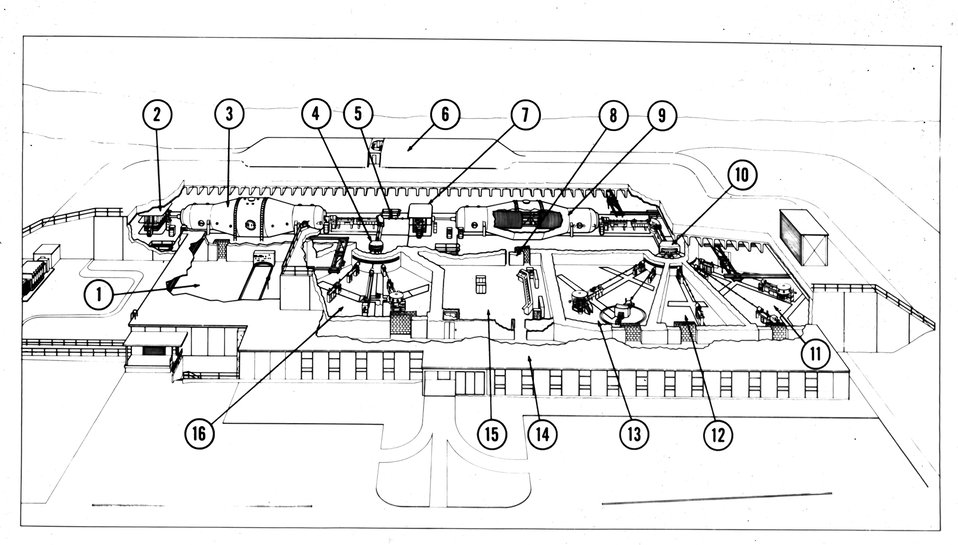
Shown in this cut-away view of the tandem Van de Graaff facility are two model MP Tandem Van de Graaff electrostatic accelerators. c. 1971